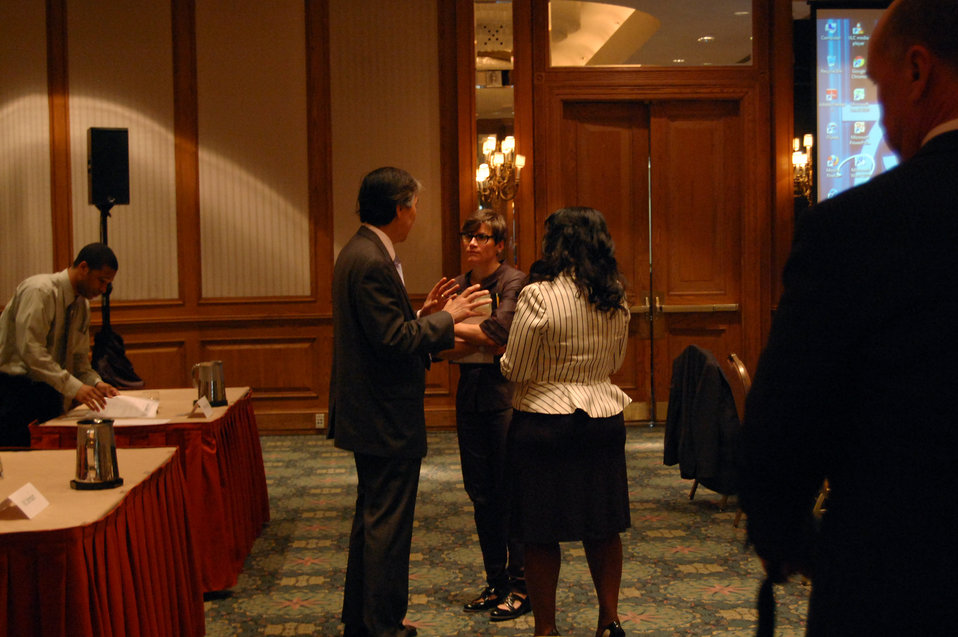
PACHA conf004